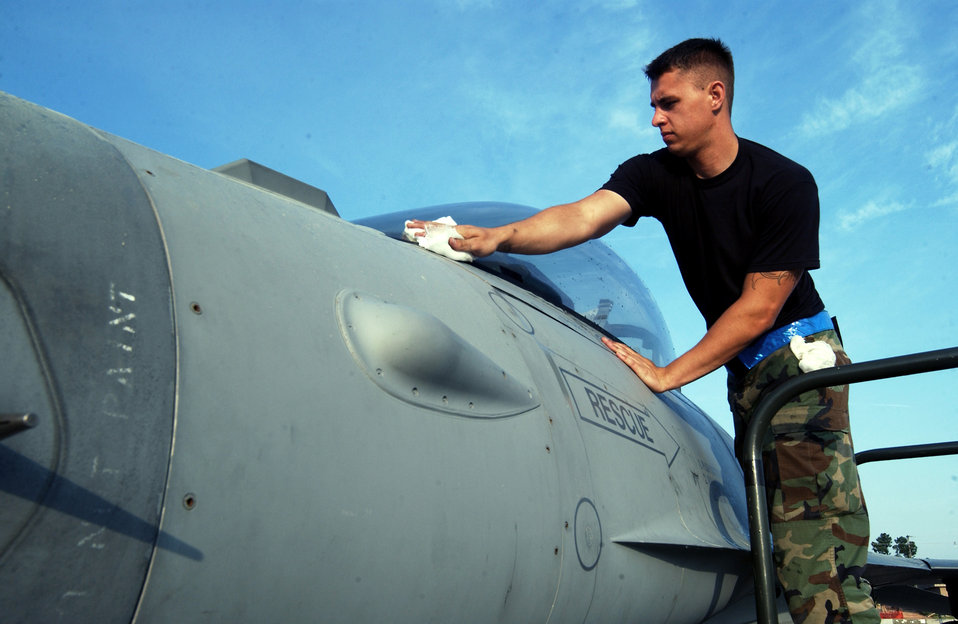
Prepare for launch

Airman 1st Class Justin Slater wipes dew and pollen from the canopy of an F-16 Fighting Falcon during an operational readiness exercise March 27 at Shaw Air Force Base, S.C. Exercises prepare Airmen for future deployments. Airman Slater is a crew chief with 79th Aircraft Maintenance Unit.